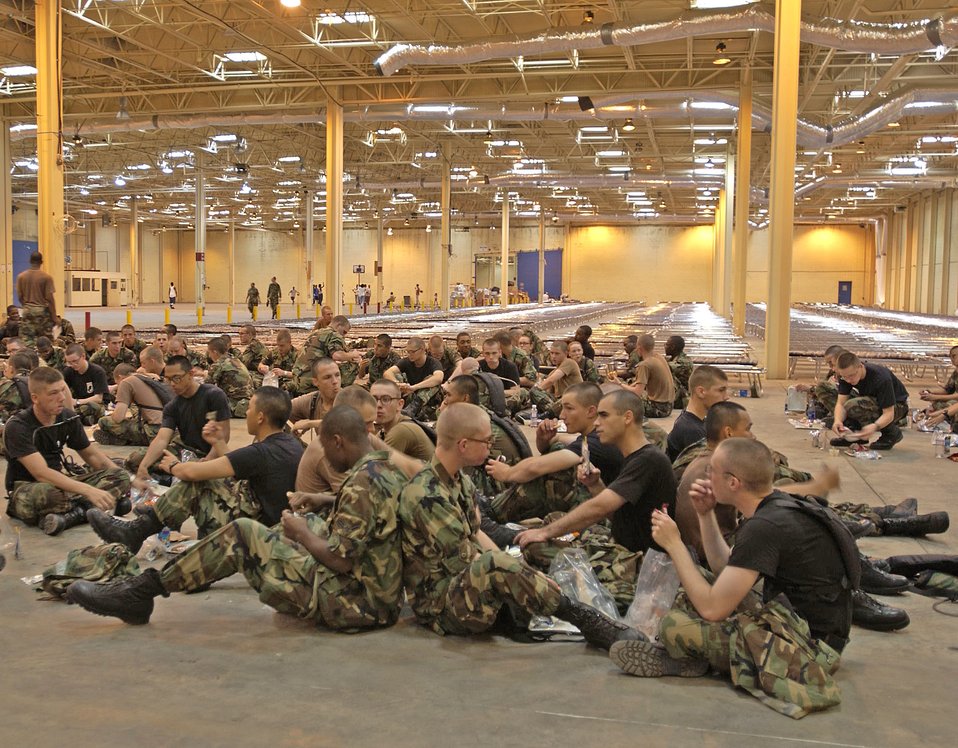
Hurricane relief

SAN ANTONIO -- Airmen from various basic military training squadrons at nearby Lackland Air Force Base take a break from setting up temporary quarters for Hurricane Katrina evacuees here. The Airmen had been preparing to depart for Keesler AFB, Miss., for advanced training.